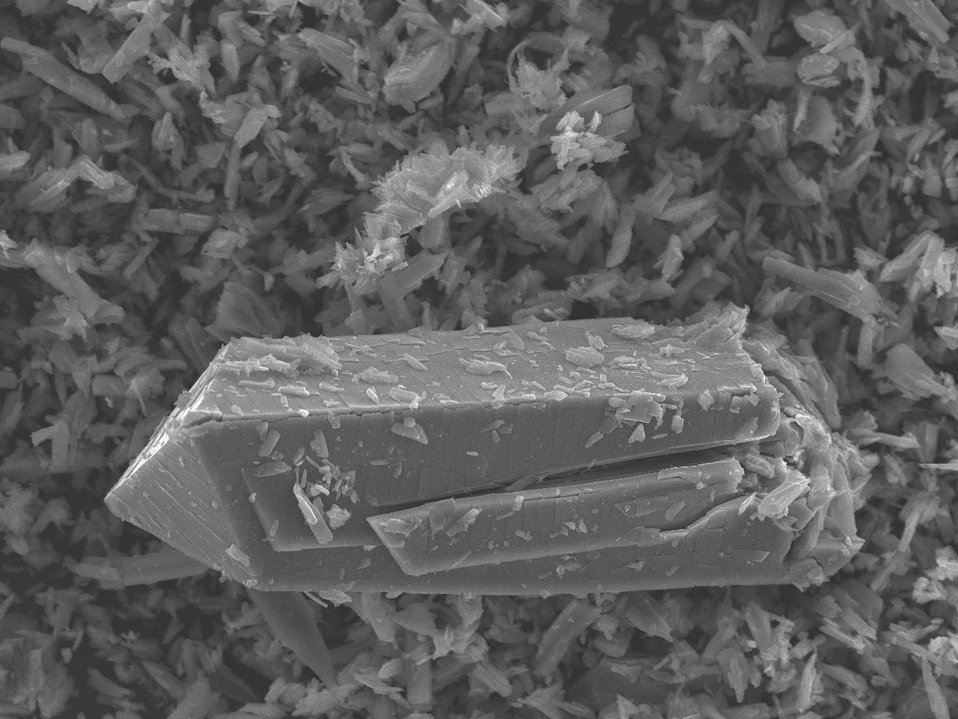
SEM-EDS, secondary electron ionization, magnification 500, accel. volt. 20 keV